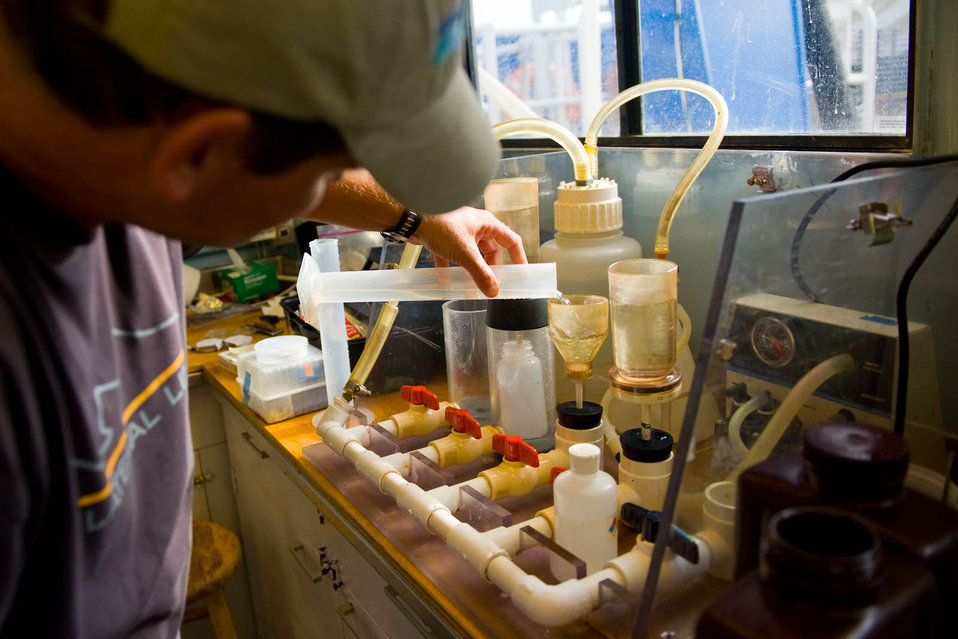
Processing water samples

Near surface water sample being passed through a filter to capture organisms for chlorophyll analysis. Cory Routh, VA Department of Environmental Quality. US EPA photo by Eric Vance. GPS coordinates available in metadata.